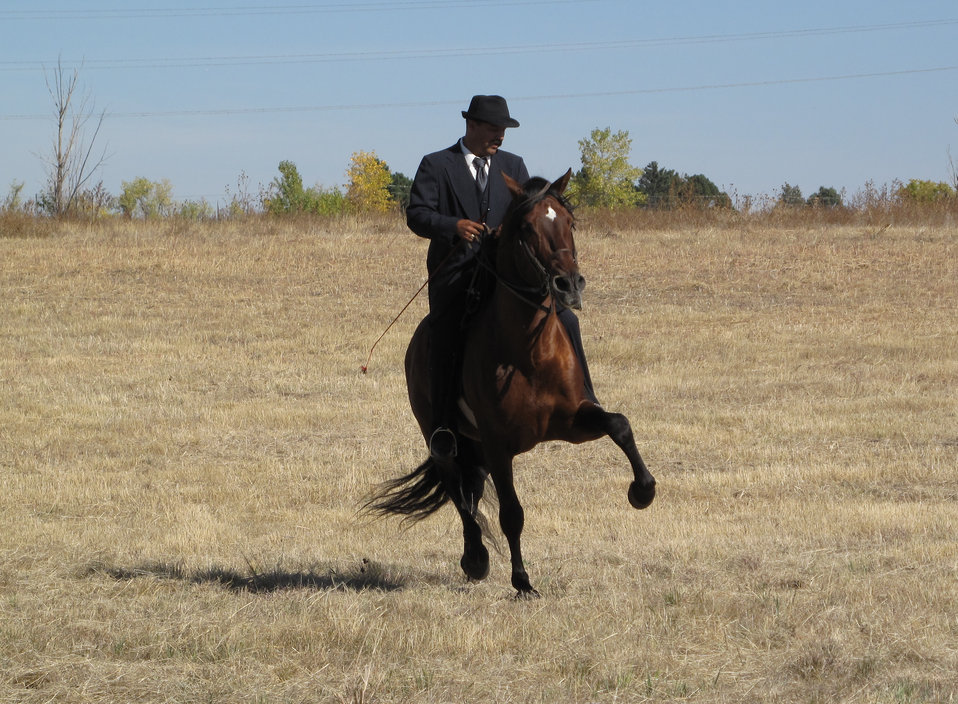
Refuge Round-Up 2010

Jose and his dancing horses put on a show.